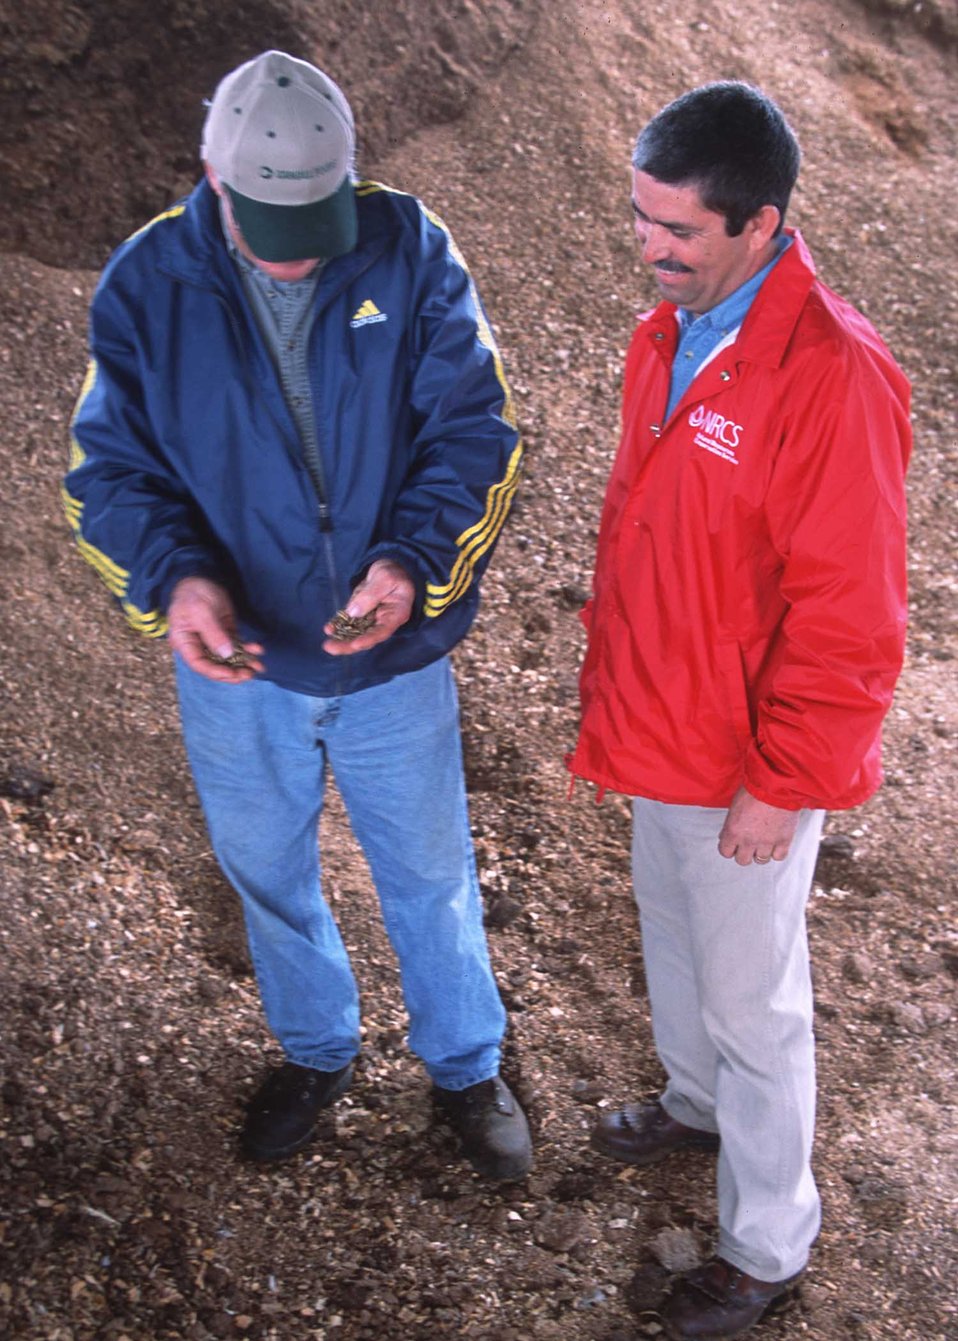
discussing composting from turkey manure and woodchips with cooperator in Benton, Arkansas.